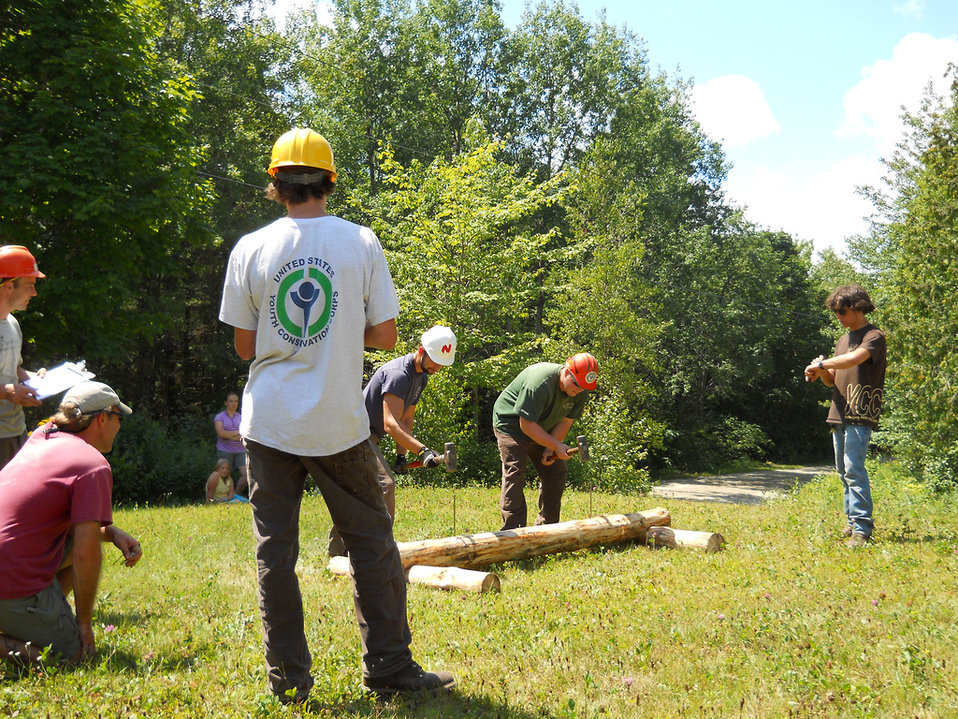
YCC construction

U.S. Fish and Wildlife Service